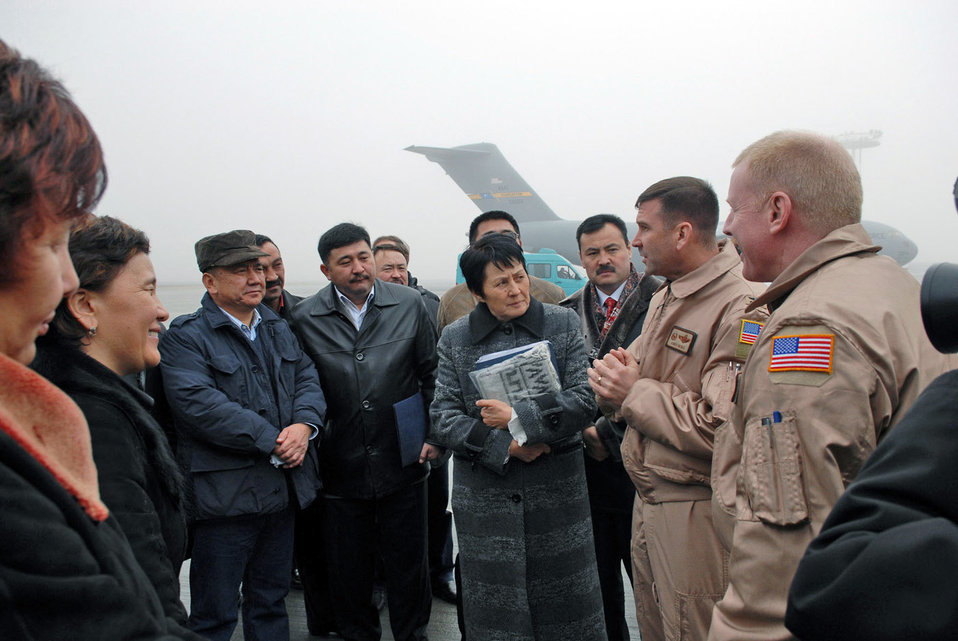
Kyrgyzstan parliament members visit Manas

Col. Christopher Bence and Senior Master Sgt. Steven Flax respond to question from members of the Kyrgyz parliament about the KC-135 Stratotanker during a Dec. 15 visit to Manas Air Base, Kyrgyzstan. Colonel Bence is the 376th Air Expeditionary Wing commander, and Sergeant Flax is the 376th Expeditionary Operations Group superintendent.